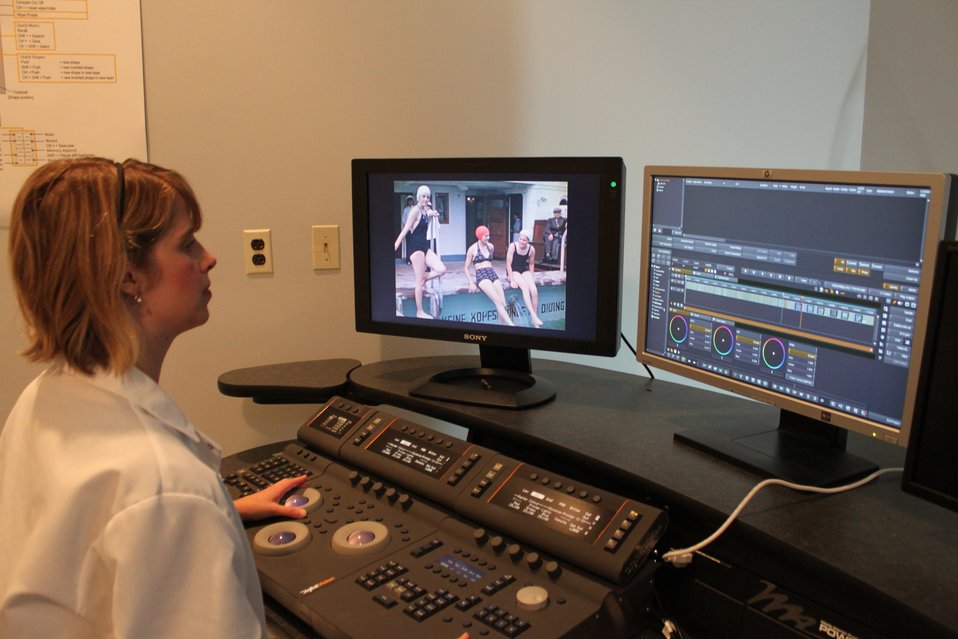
Criss Kovac works on digital restoration of Eva Braun's home movies; Location: Archives 2 - Motion Picture Preservation Lab, College Park, MD